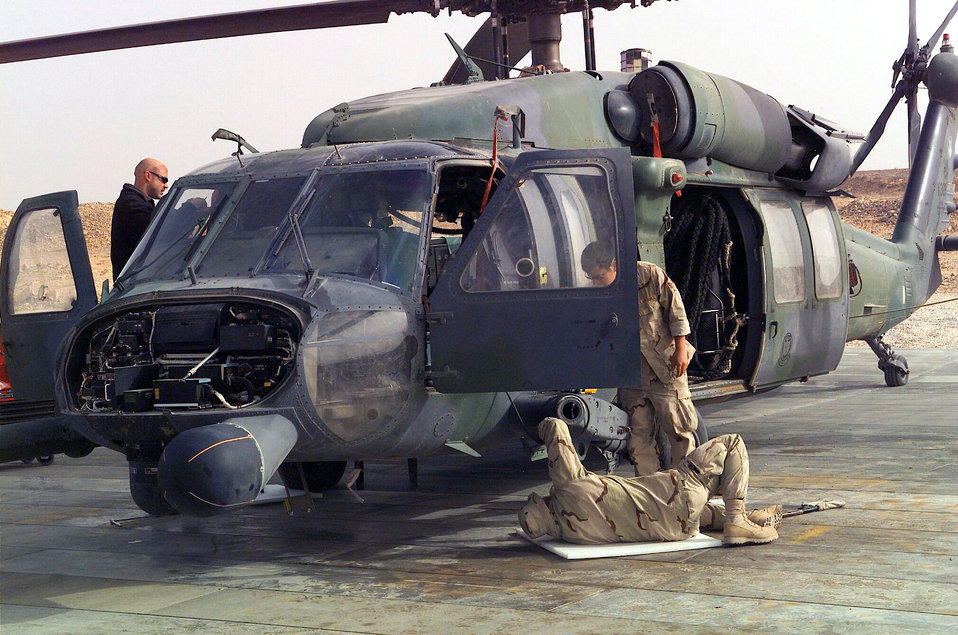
Pave Hawk modification

OPERATION IRAQI FREEDOM -- Member of the 66th Rescue Squadron, 410 Air Expeditionary Wing, installs an external gun mount system modification, offering three different styles of guns to an HH-60G Pave Hawk, April 7. Forward deployed in an undisclosed location, the 410 AEW is responsible for critical sorties flown in support of Operation Iraqi Freedom.